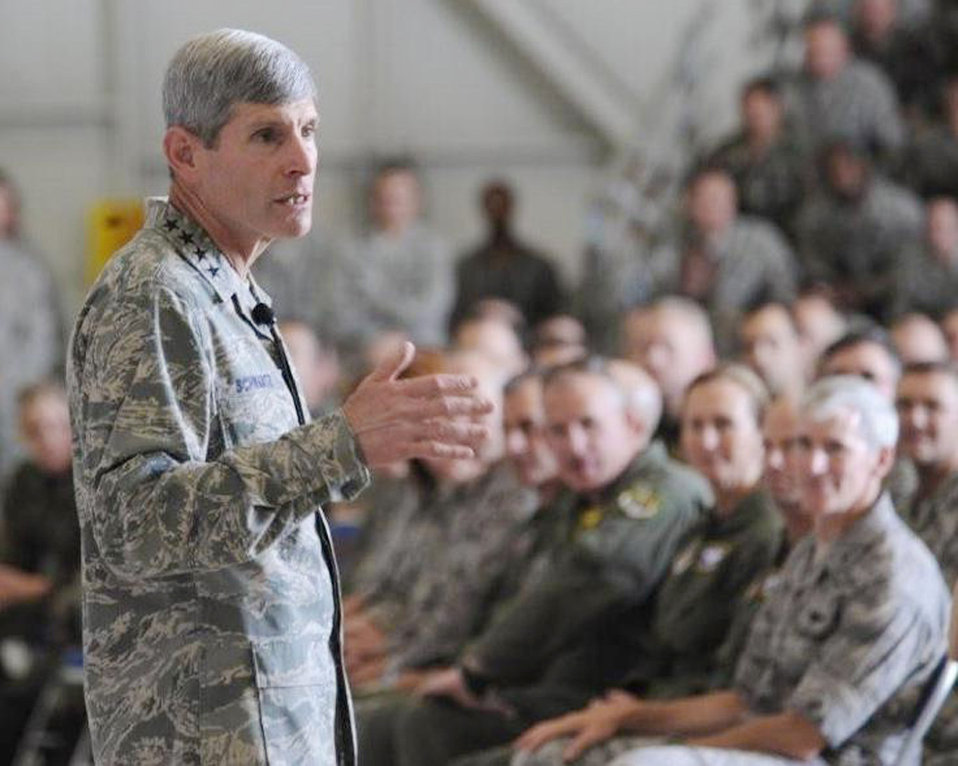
CSAF visits Beale

Air Force Chief of Staff Gen. Norton Schwartz speaks during an Airmen's Call Aug. 21 at Beale Air Force Base, Calif., home of the 9th Reconnaissance Wing and its U-2